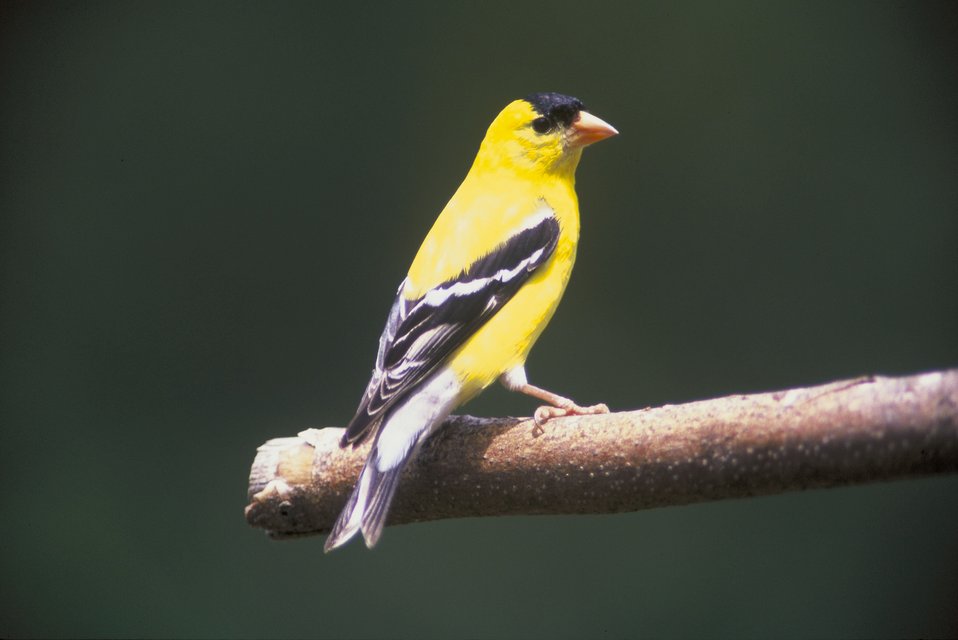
Goldfinch on a tree branch.

Male goldfinch on tree branch.